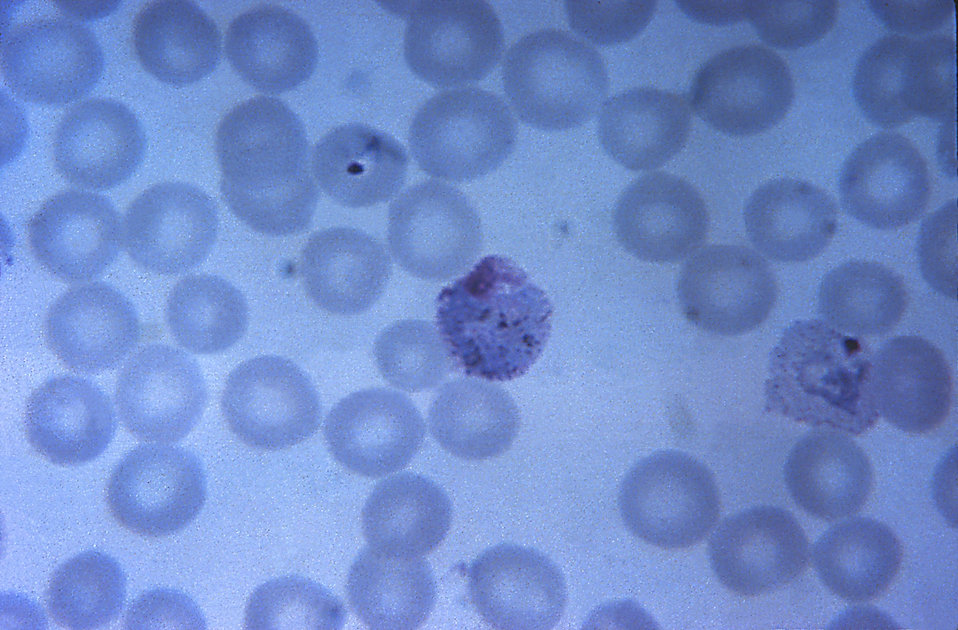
This micrograph from a thin film depicts a mature Plasmodium vivax trophozoite (center); Magnified 1125X.